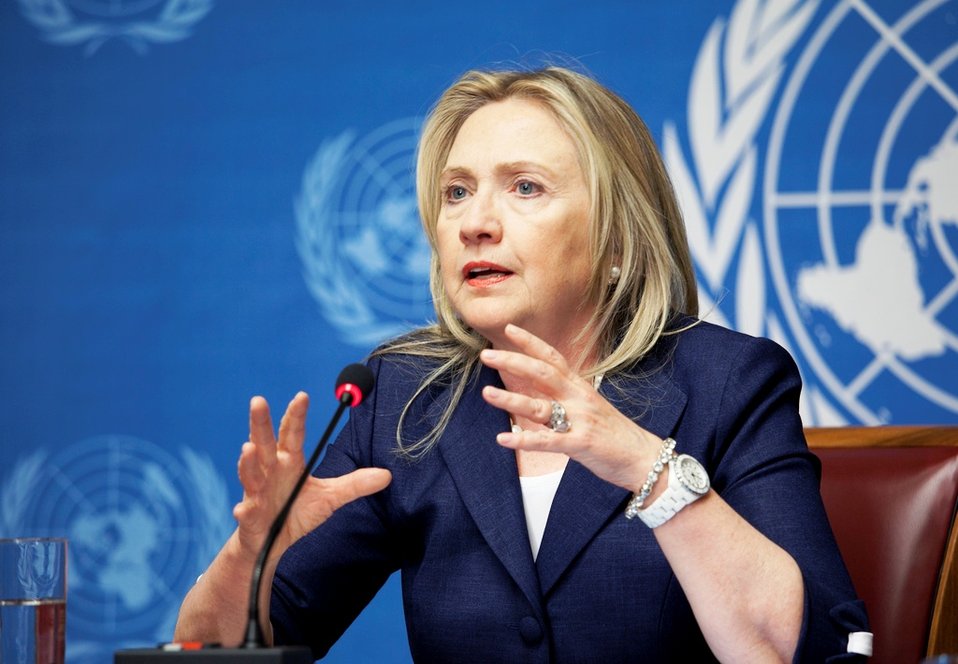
Secretary Clinton Speaks With Reporters

U.S. Secretary of State Hillary Rodham Clinton speaks with reporters at the United Nations Office at Geneva following the June 30, 2012 meeting of the Action Group for Syria.